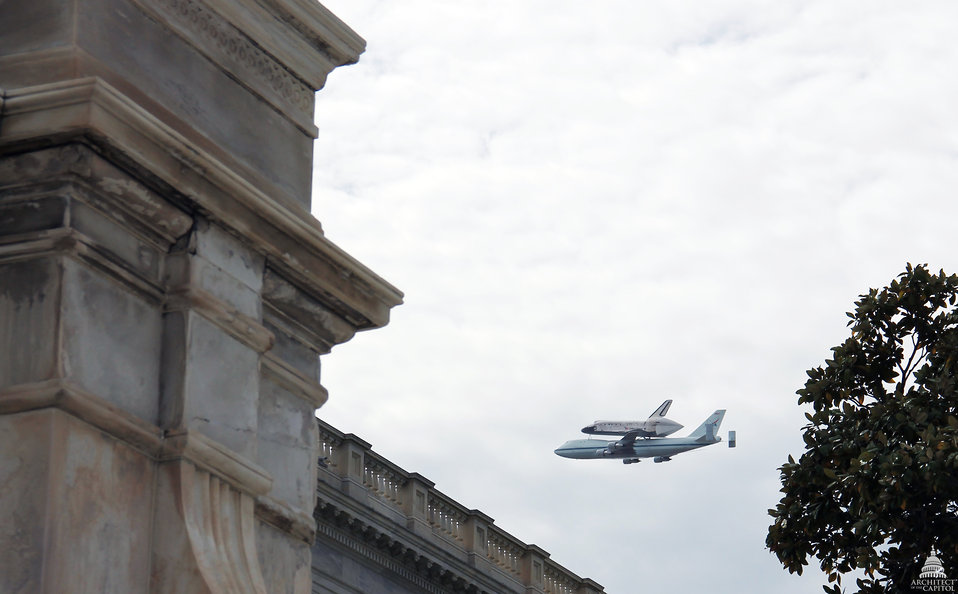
Shuttle Discovery Flying Over the U.S. Capitol